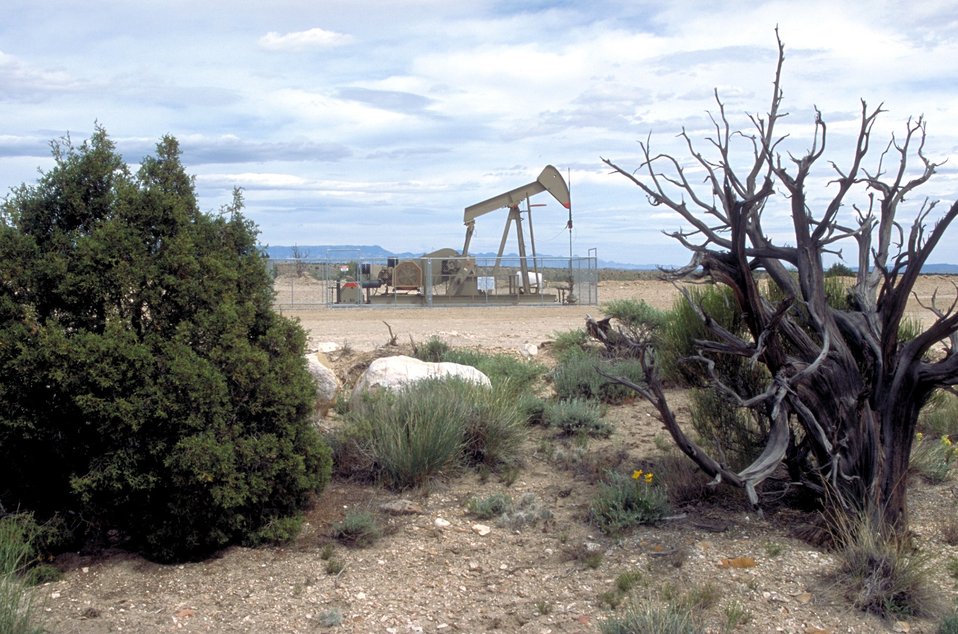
Pump unit producing coal bed methane near Price, Utah.